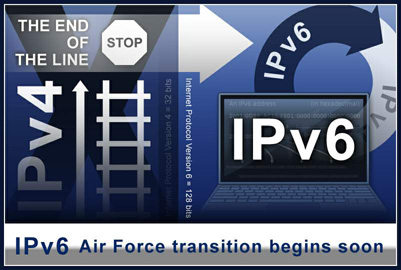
IPv6 transition